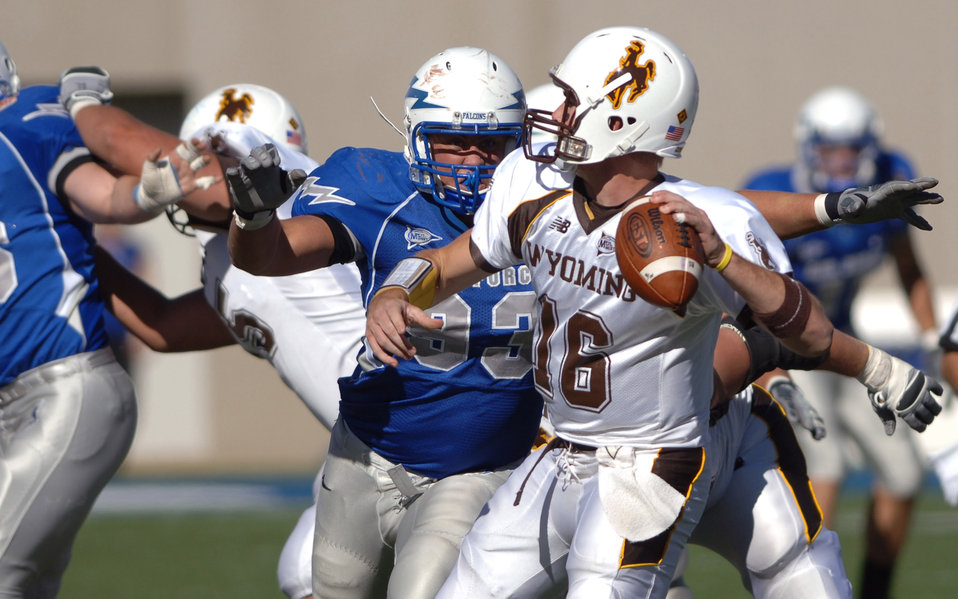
Football: Falcons bowl-eligible after win over Wyoming

U.S. Air Force Academy Falcons nose guard Ben Garland pressures Wyoming quarterback Karsten Sween during Air Force's 20-12 win Oct. 20 at Falcon Stadium in Colorado. The Air Force defense sacked Sween twice and forced him to throw three interceptions.